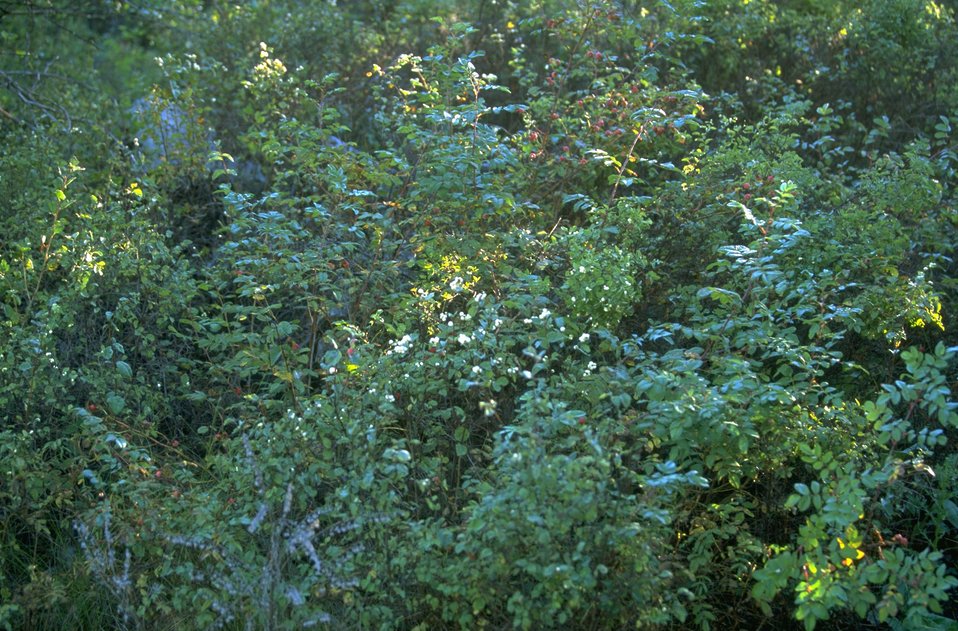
Riparian vegetatioin along the Blackfoot River